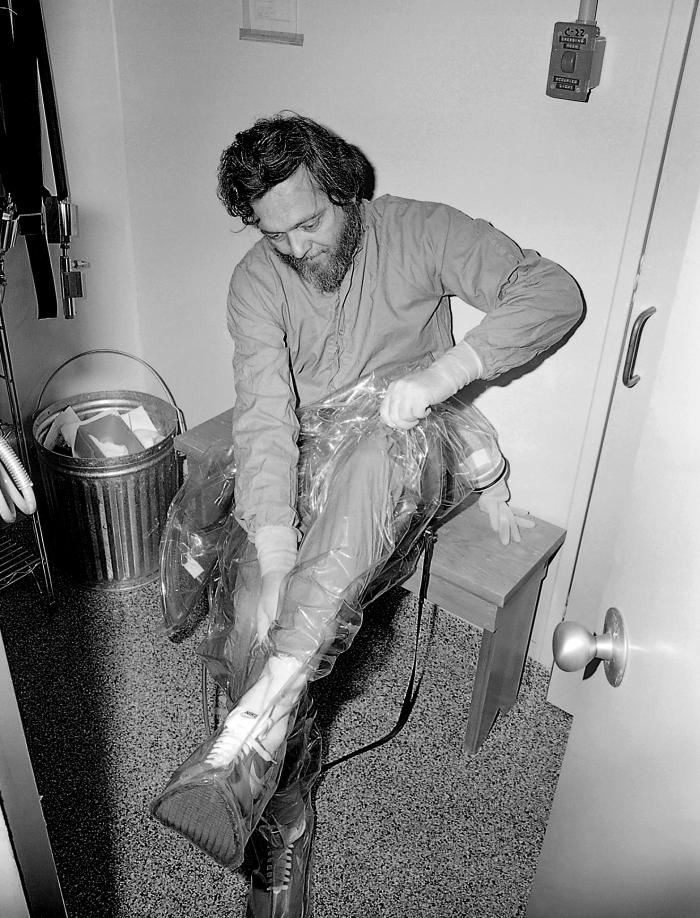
This 1978 photograph depicted Dr. Karl M. Johnson putting on a positive-pressure suit while he was inside the 'Suit Lab' of one of the CDC's early Maximum Containment Laboratories.